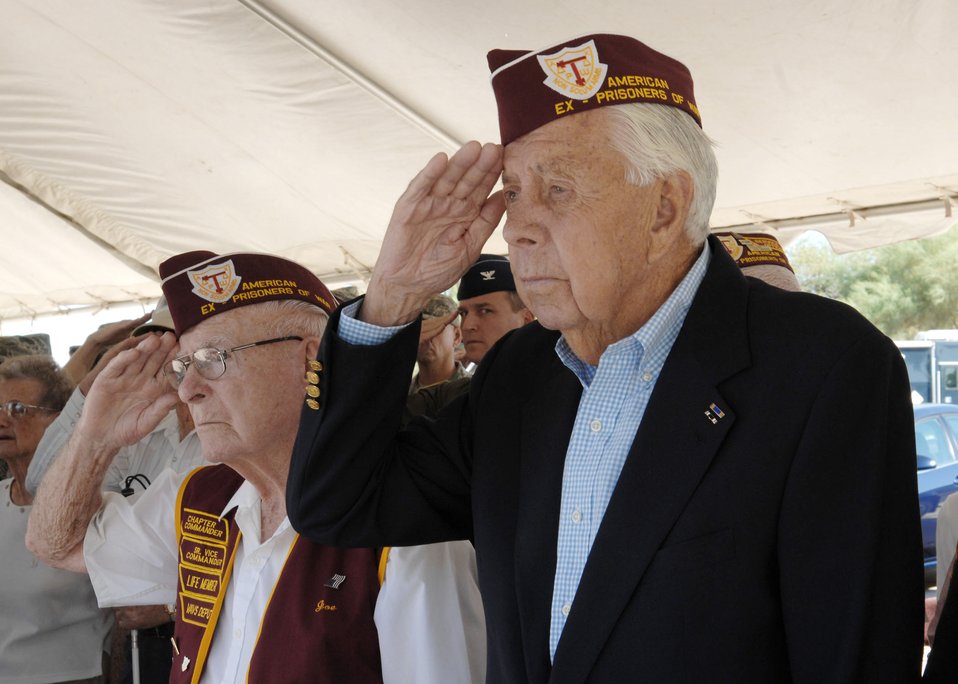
Salute to the flag

Veterans of World War II and ex-POWs salute during the national anthem Sept. 18, 2009, while attending a ceremony at Davis-Monthan Air Force Base, Ariz.